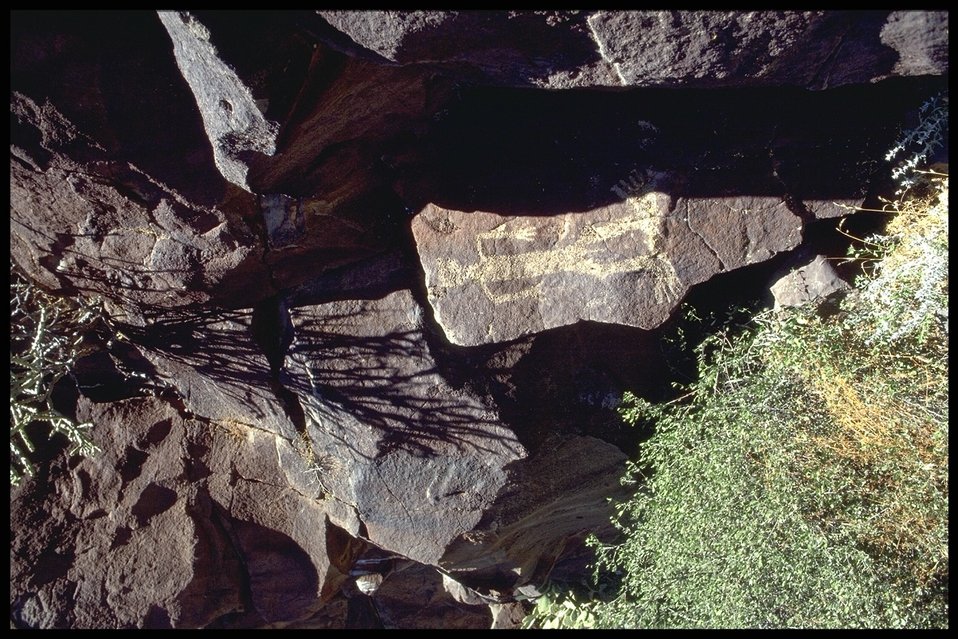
Petroglphs (Rock Art) can be found throughout the 71,000 Acres that make up the Agua Fria National Monument.